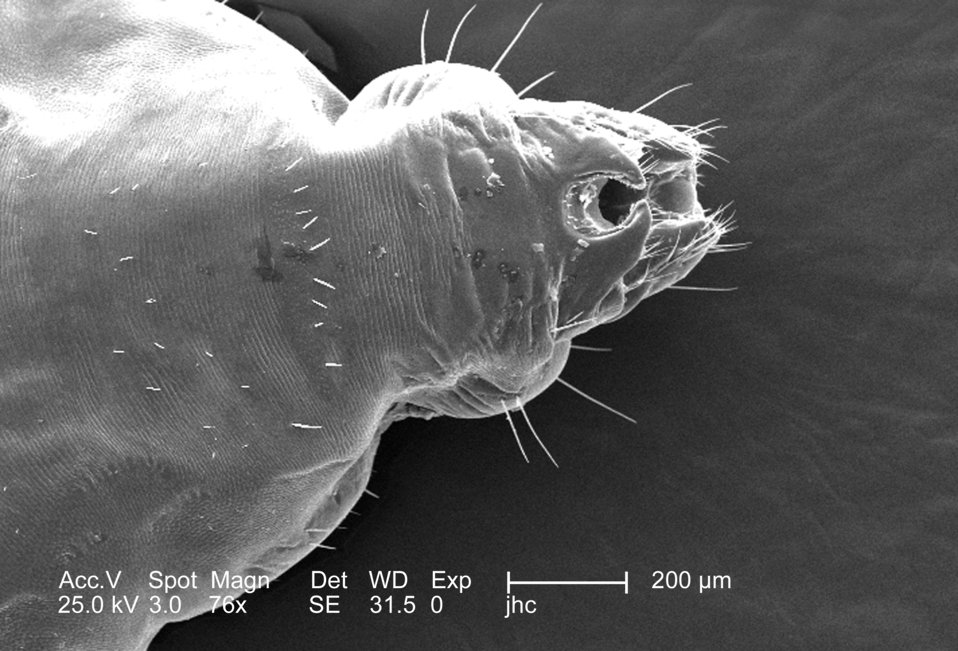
This 2006 scanning electron micrograph (SEM), under a low magnification of only 76x, revealed the distal tip of the abdominal region of a female body louse, Pediculus humanus var. corporis from a dorsal perspective. Some of the morphologic characteristics seen in this image include the two 'gonopodia', which are located dorsal to the larger two setae-bearing 'claspers'. It is into this notch that the male would insert the 'aedeagus', or penis during the process of copulation. This notch, identifying the louse as a female is observable to the naked eye, whereas, in the male louse, the distal abdomen is rounded, and not concave.